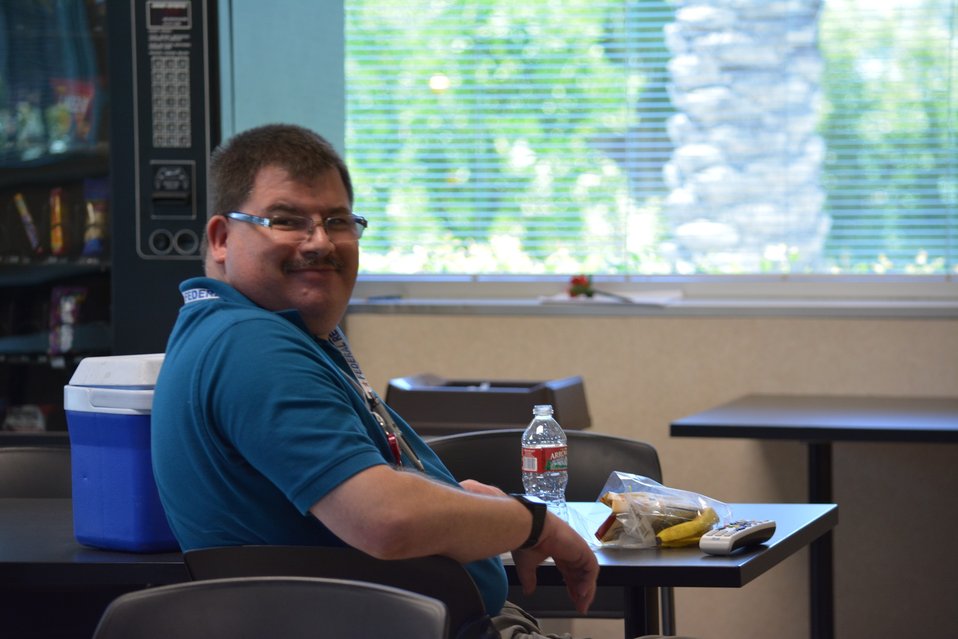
Lane Acker enjoys a well deserved break.; Location: Riverside Facility, Perris, CA